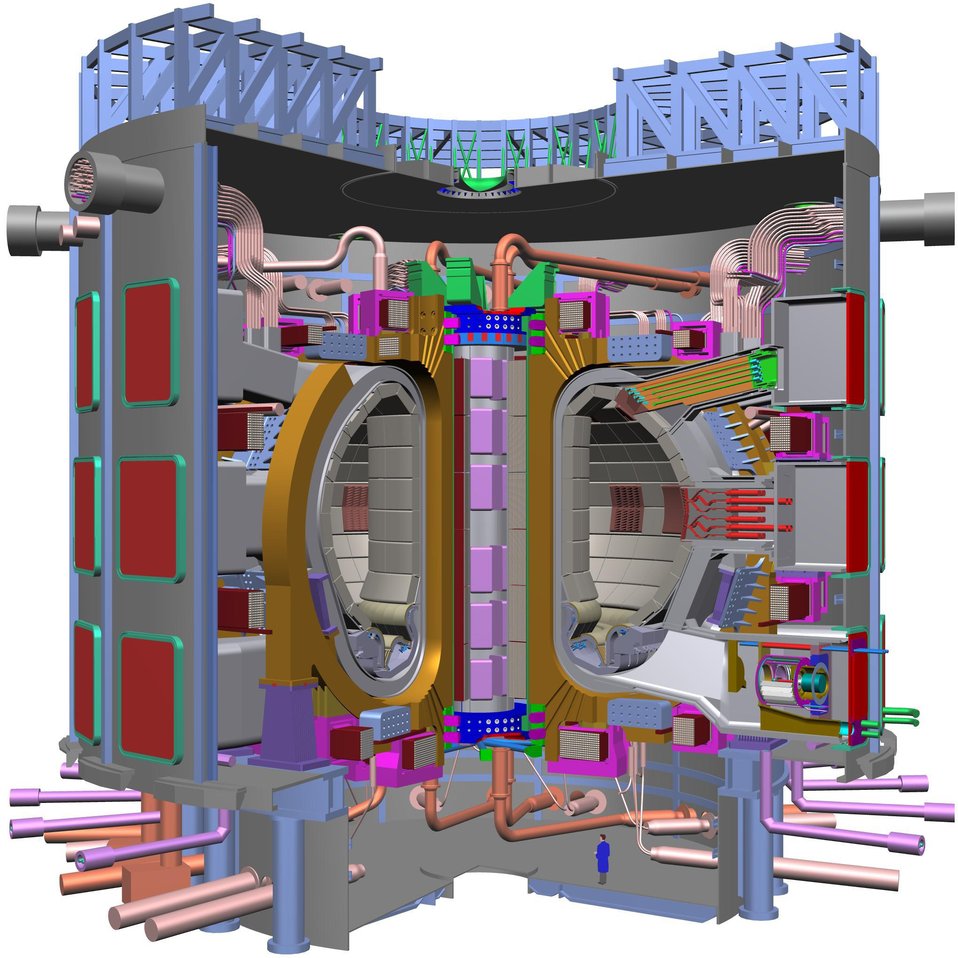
ARTIST'S CONCEPT OF THE INTERNATIONAL THERMONUCLEAR EXPERIMENT REACTOR (ITER).

PHYSICISTS FROM THE PRINCETON PLASMA PHYSICS LABORATORY ARE PARTICIPATING IN A WORLD-WIDE COLLABORATION TO DESIGN A MAJOR TOKAMAK FACILITY, THE INTERNATIONAL THERMONUCLEAR EXPERIMENTAL REACTOR (ITER). ITER WILL BE A LARGE INTERNATIONAL FACILITY CAPABLE OF DEMONSTRATING SELF SUSTAINED POWER PRODUCTION IN THE BILLION WATT RANGE AND CAPABLE OF TESTING AND INTEGRATING ESSENTIAL REACTOR COMPONENTS.